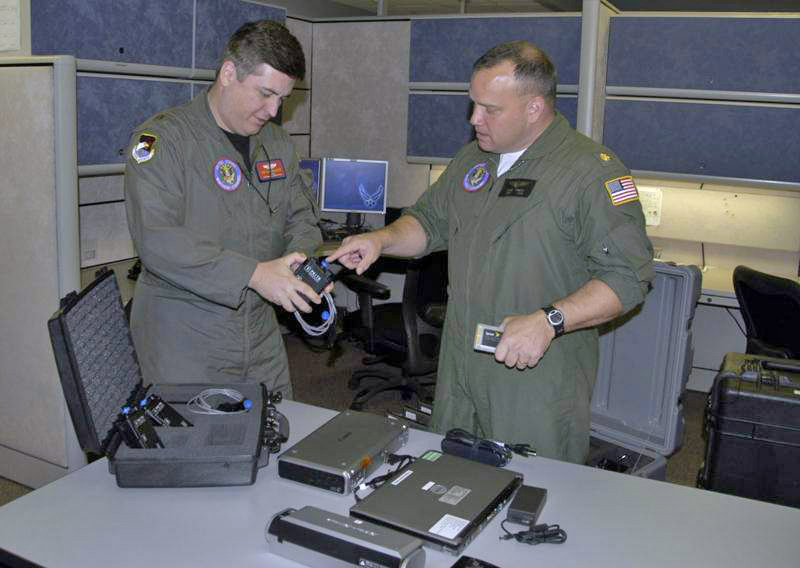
Tyndall Airmen deploy to support Haitian relief efforts

Maj. Jim Gallagher (left) and Navy Lt. Cmdr. Chris Arnett examine Blue Force Tracking devices in preparation for Commander Arnett's deployment in support of Haitian earthquake relief efforts Jan. 13, 2010, at Tyndall Air Force Base, Fla.